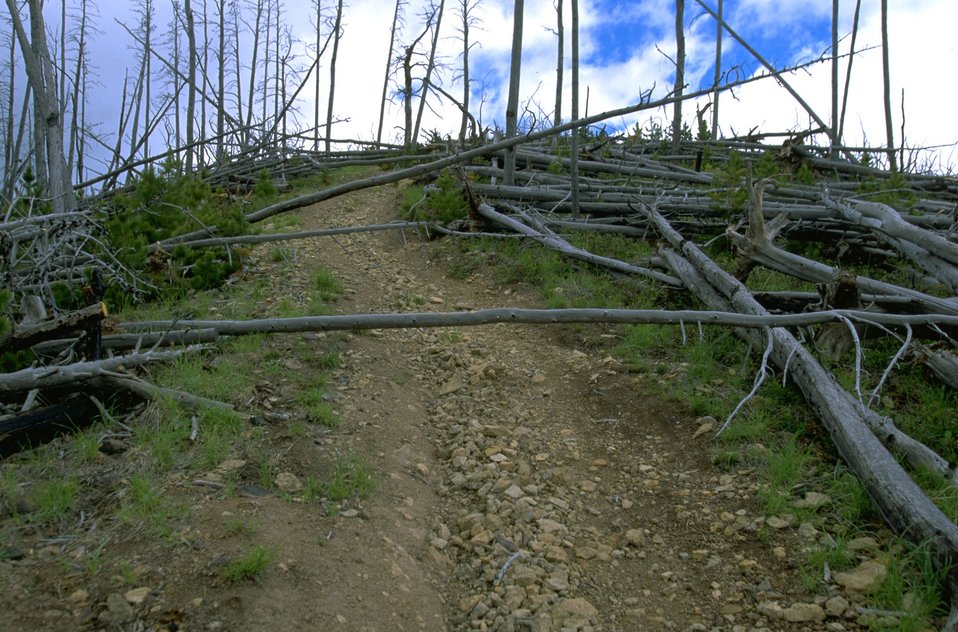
Closed dozer trail through down and dead trees